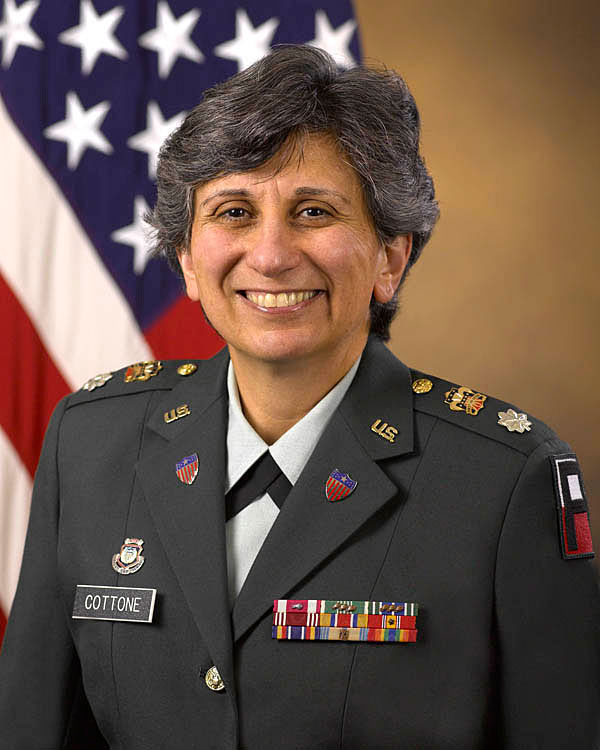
Karen Cottone